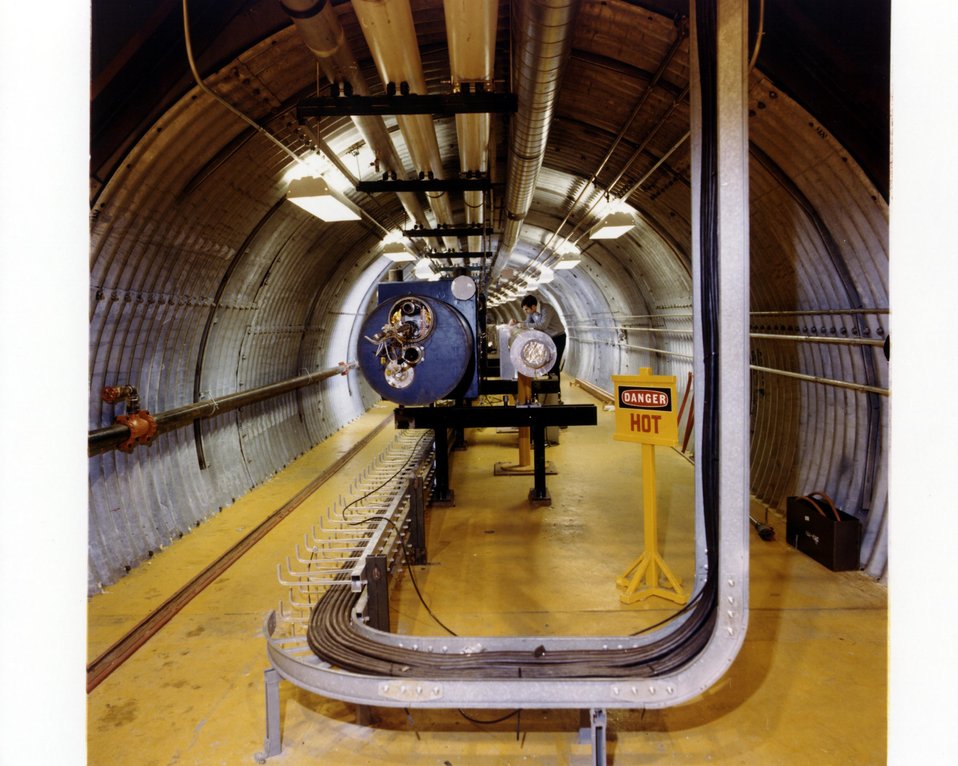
CBA IS A PROTON-PROTON COLLIDING BEAM ACCELERATOR WHICH IS BEING BUILT TO STUDY THE BASIC STRUCTURE OF ENERGY AND MATTER. THE FACILITY ITSELF IS AN UNDERGROUND CIRCULAR TUNNEL, WHICH IS 3.8 KILOMETERS IN CIRCUMFERENCE. TWO RINGS OF SUPERCONDUCTING MAGNETS WILL BE INSIDE THE TUNNEL. PRO- TON BEAMS WILL BE INJECTED INTO THE TUNNEL AND ACCELERATED TO ENERGIES UP TO 400 GEV. AT SIX PLACES ALONG THE TUNNEL, THE BEAMS WILL COLLIDE. EXPERIMENTAL HALLS, WHICH ENCLOSE THESE SIX INTERSECTIONS, WILL HOUSE EQUIPMENT FOR STUDYING THE RESULTS OF THE COLLISIONS.